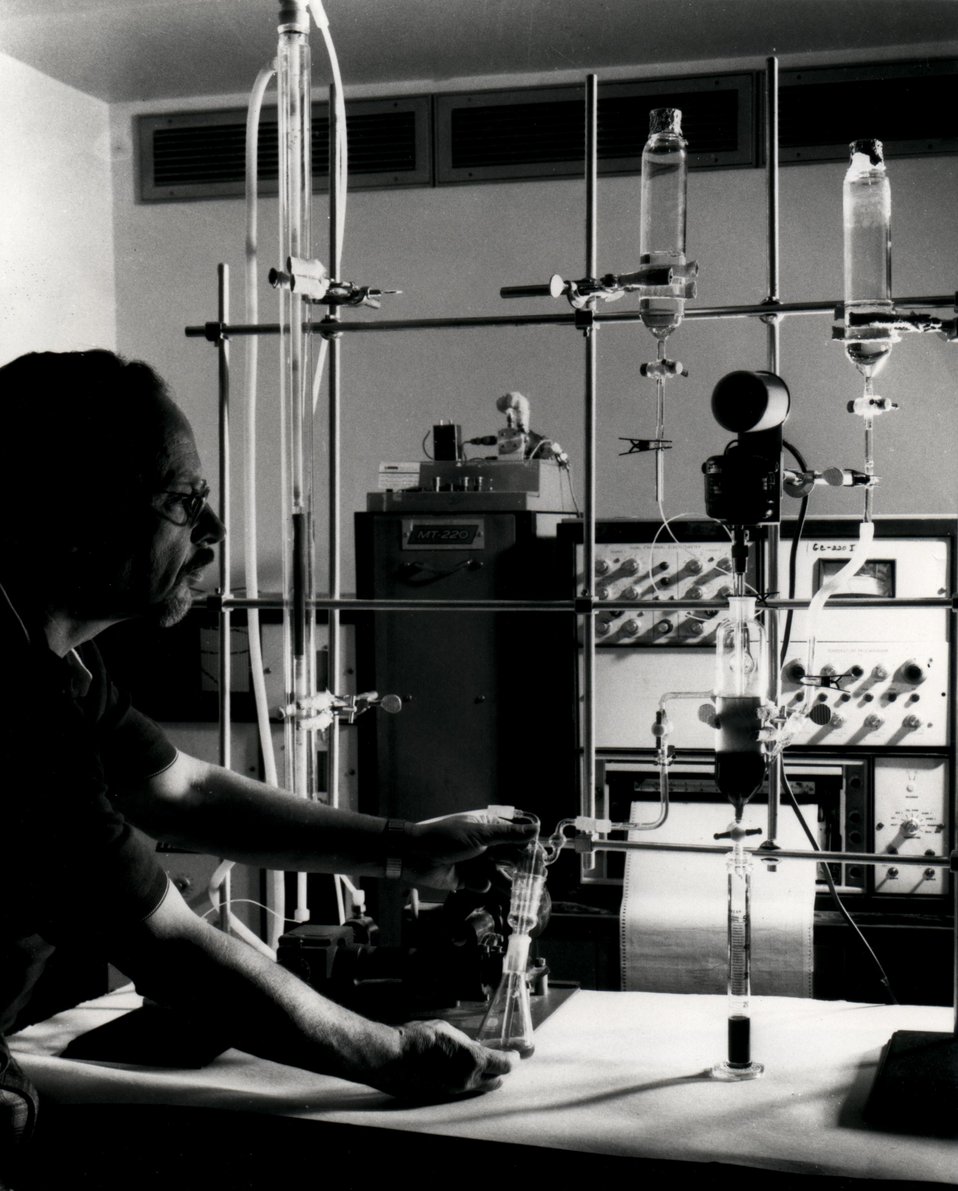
Scientists at Oak Ridge National Laboratory are heavily involved in the coal technology program. Circa 1975.